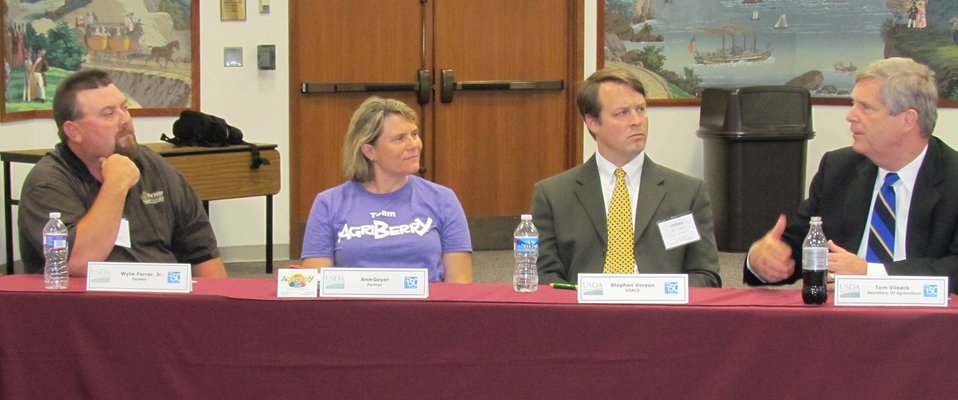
Left to right Wylie Farrar, Jr., Anne Geyer, Stephen Versen, Virginia Department of Agriculture and Consumer Services, and U.S. Agriculture Secretary Tom Vilsack, attended a roundtable meeting with America's Farmers and Ranchers in Richmond, VA., on Wednesday, May 23, 2012.